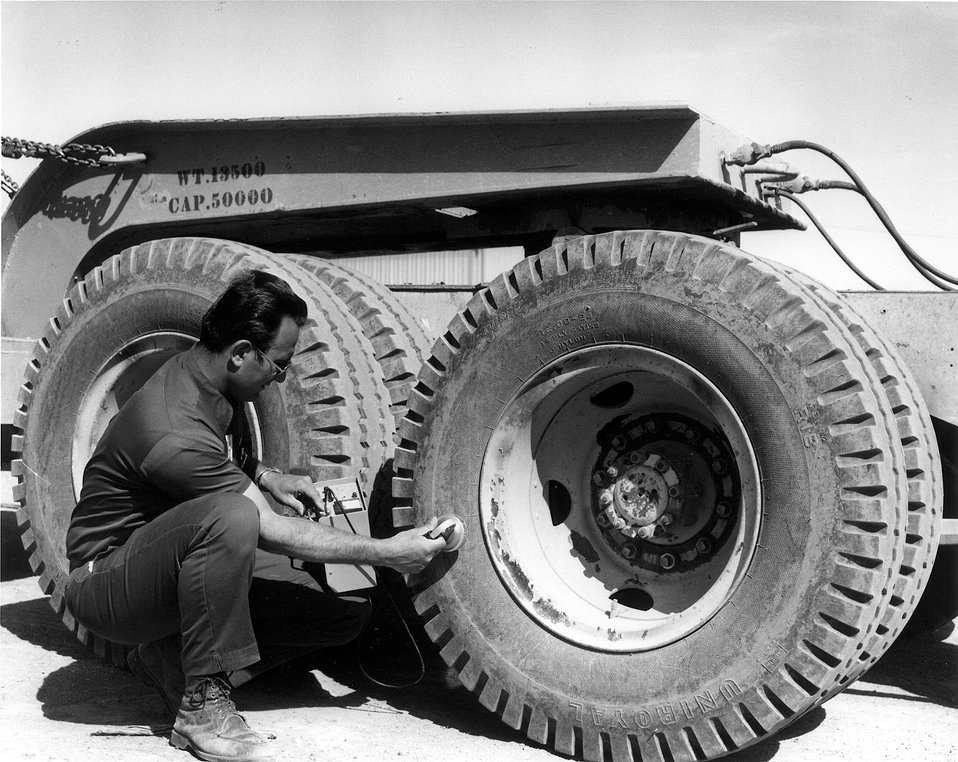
A portable radiation monitor is used to check wheels of a vehicle that may have passed through a contaminated area at the Atomic Energy Commission's National Reactor Testing Station in Idaho. Circa 1974.